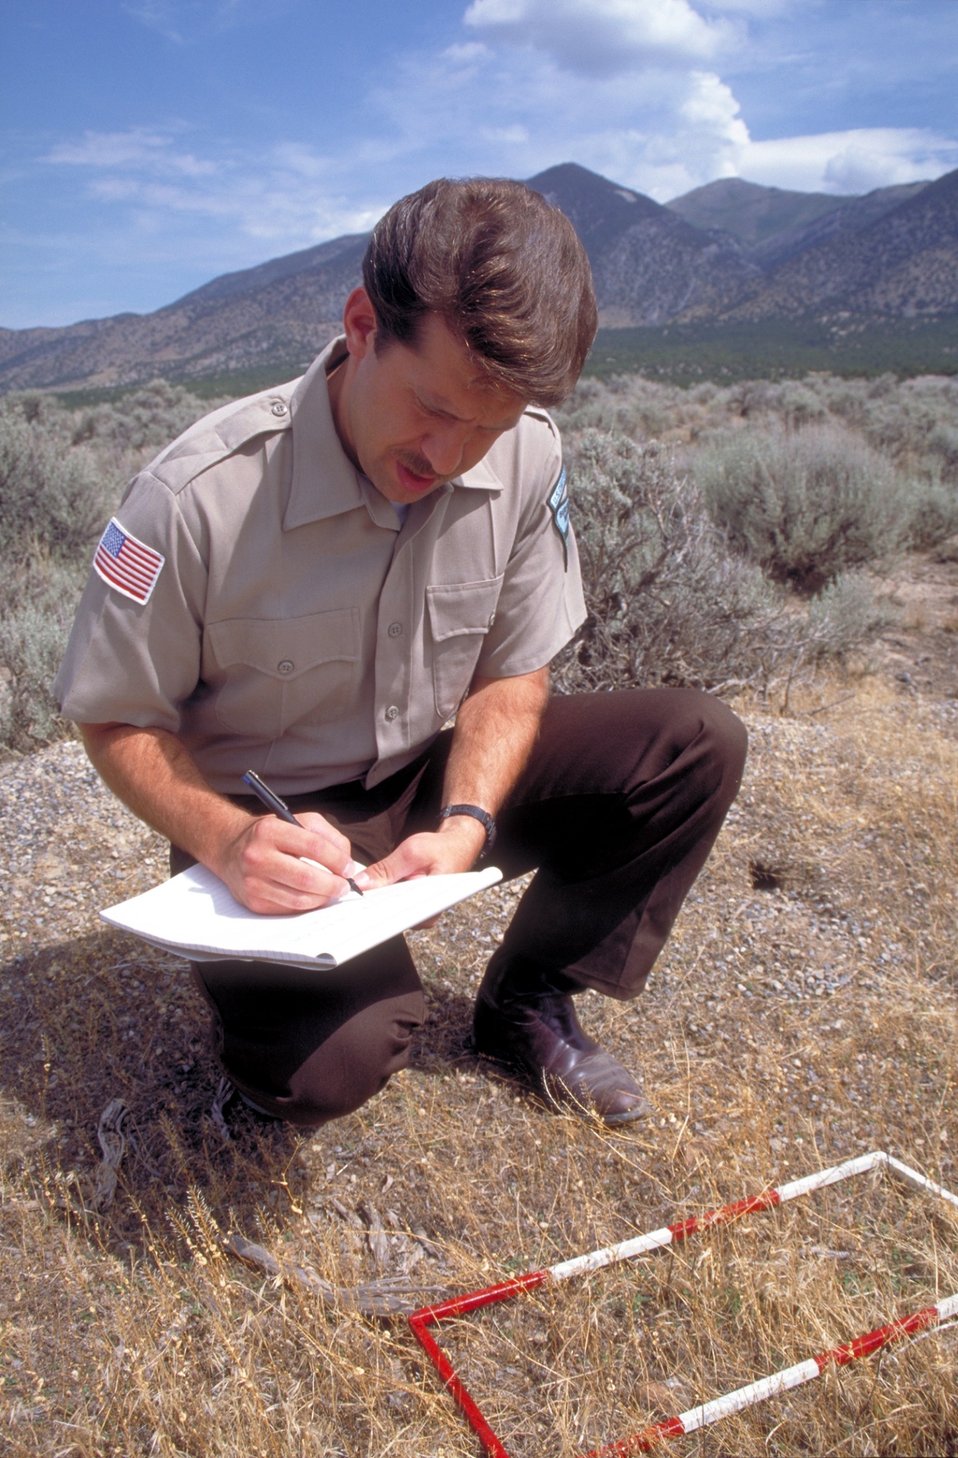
Range study in the West Desert of Utah.